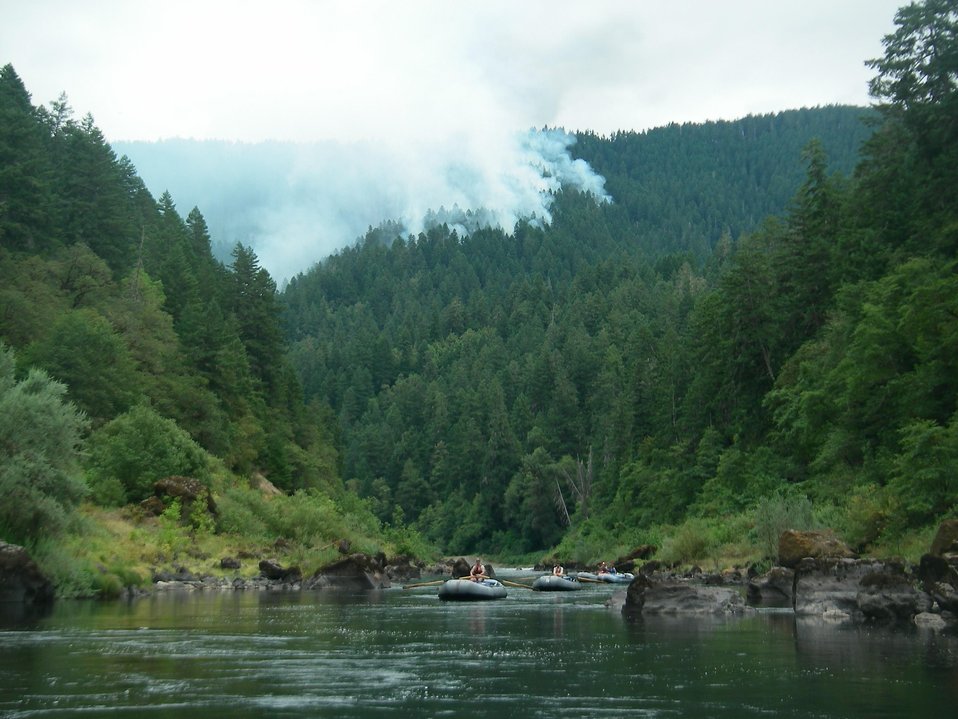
Firefighters use rafts to navigate down the Rogue River at the Big Windy Complex Fire. The Big Windy Complex Fire consists of three fires: The Big Windy Fire, Calvert Peak Fire, and Jenny Fire (formerly the Windy 16 Fire) near Grants Pass, OR. The fires began on Jul. 26, 2013 by lighting have consumed approximately 15,358 acres and are 15% contained.